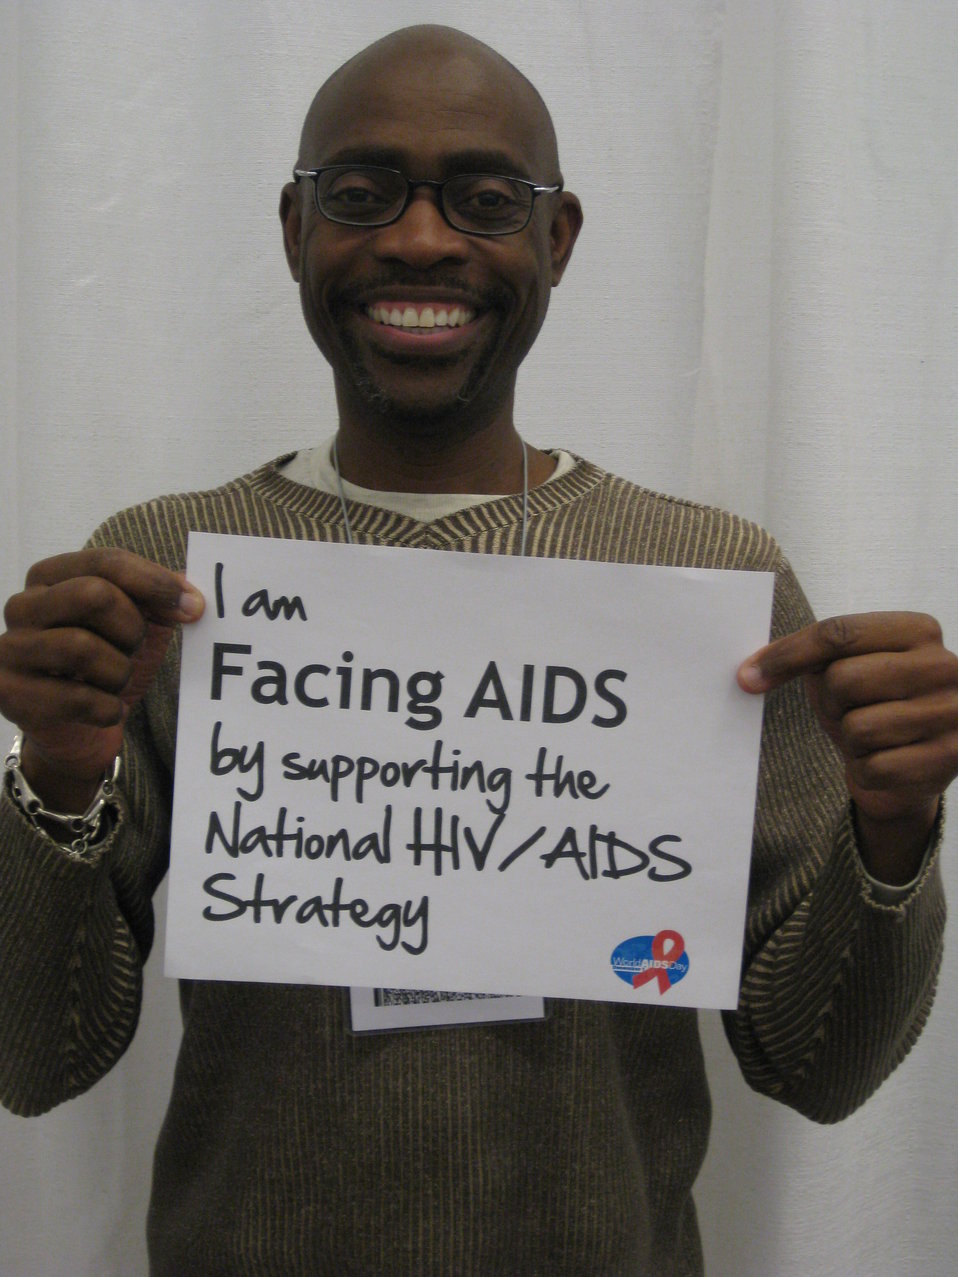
I am FACING AIDS by supporting the National HIV/AIDS Strategy

FACING AIDS at the HIV Prevention Leadership Summit 2010 in Washington, DC.